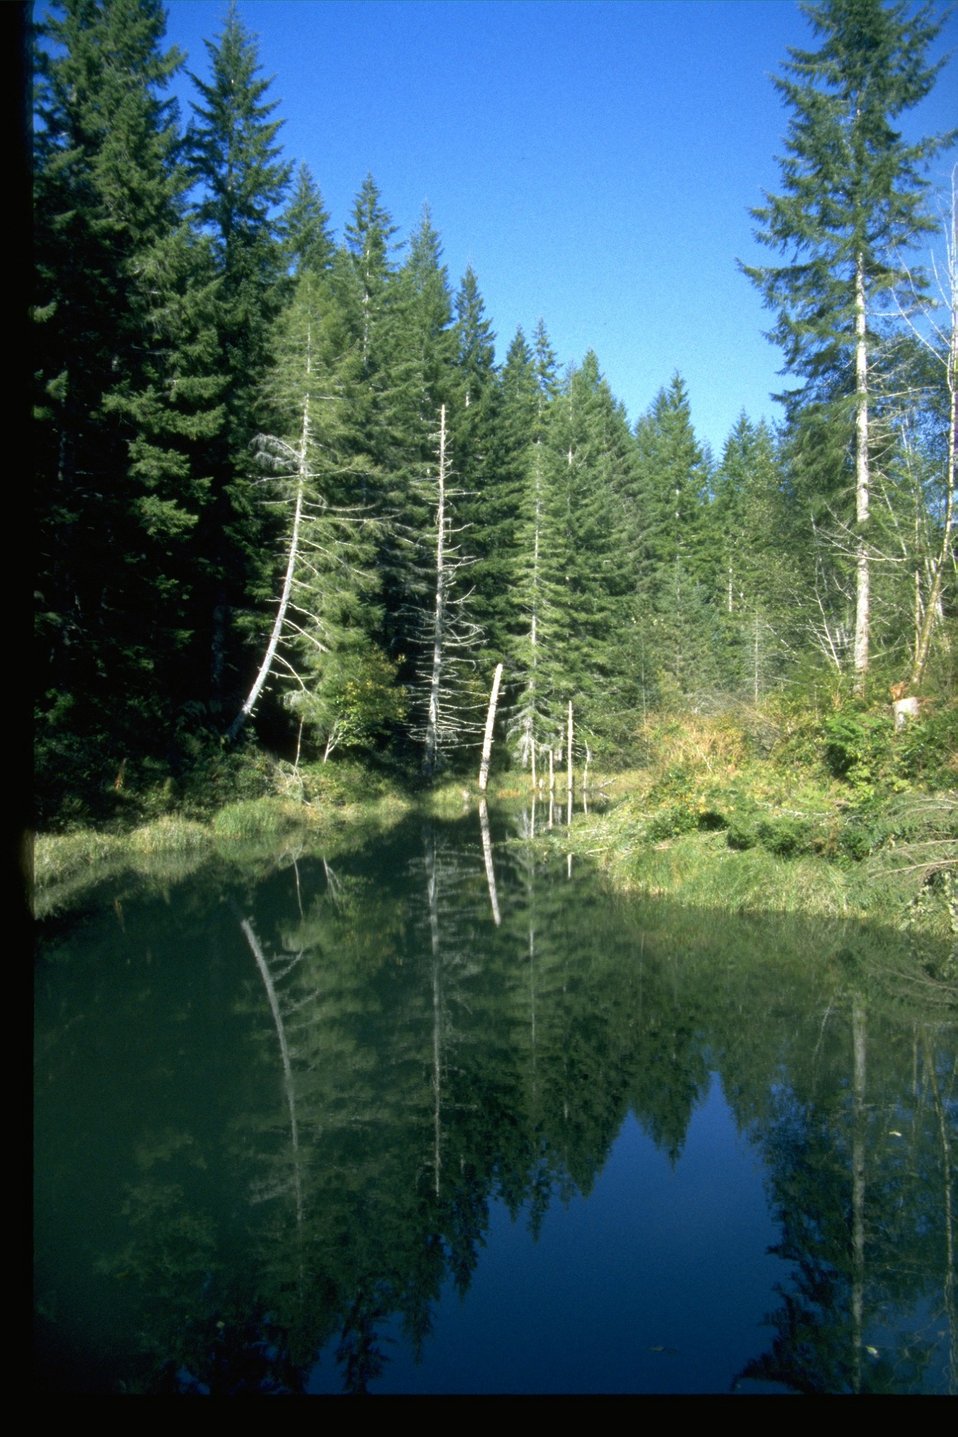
Blue Ridge Waterhole #2.